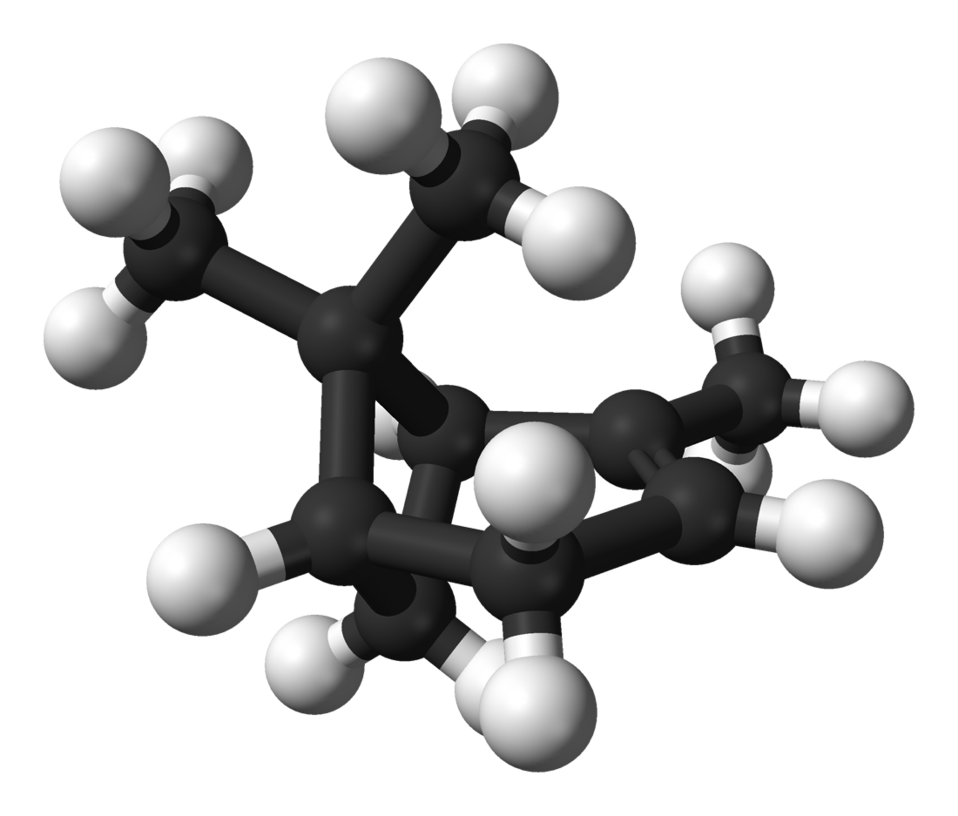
Ball-and-stick model of the (−)-α-pinene molecule